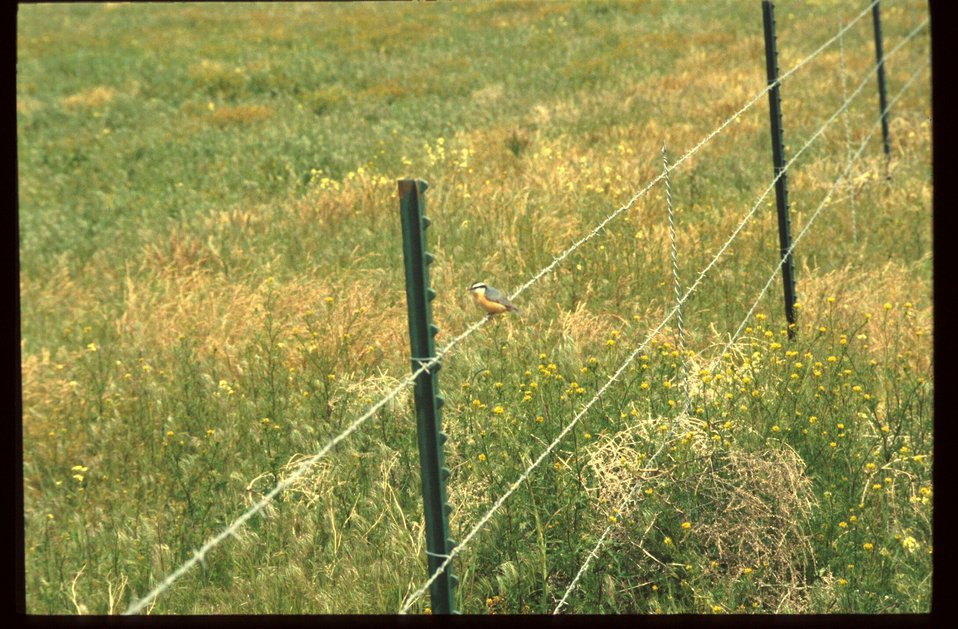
Bird Range Restoration Project